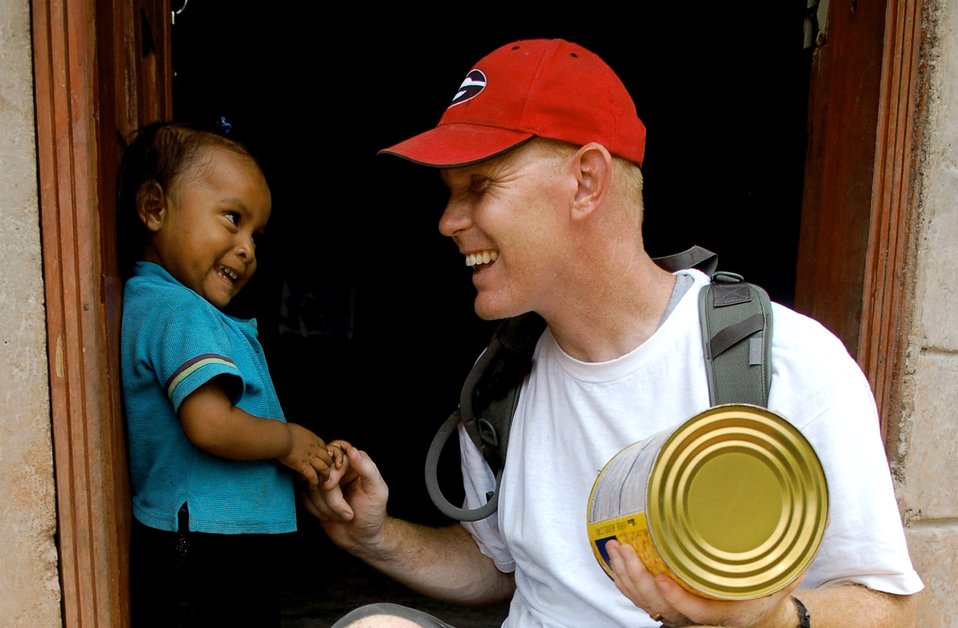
Friends share a laugh and some food

Chaplain (Capt.) Chad Bellamy plays with a young Honduran girl during a break Sept. 29 while delivering supplies to families living in the mountains near Comayagua, Honduras. The Joint Task Force-Bravo chaplain organized the trip so JTF-B people could deliver food to the village of Mata De Platano.